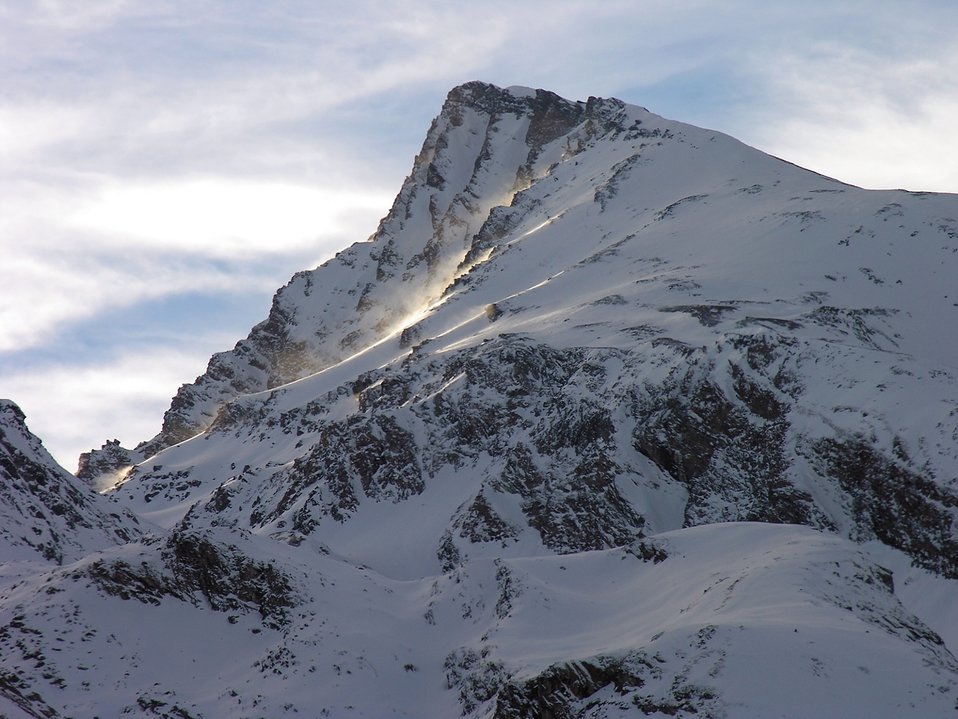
Italiano: Monti la punta Rossa della Grivola Cogne (30-12-2004) - Alpi Graie - Italia